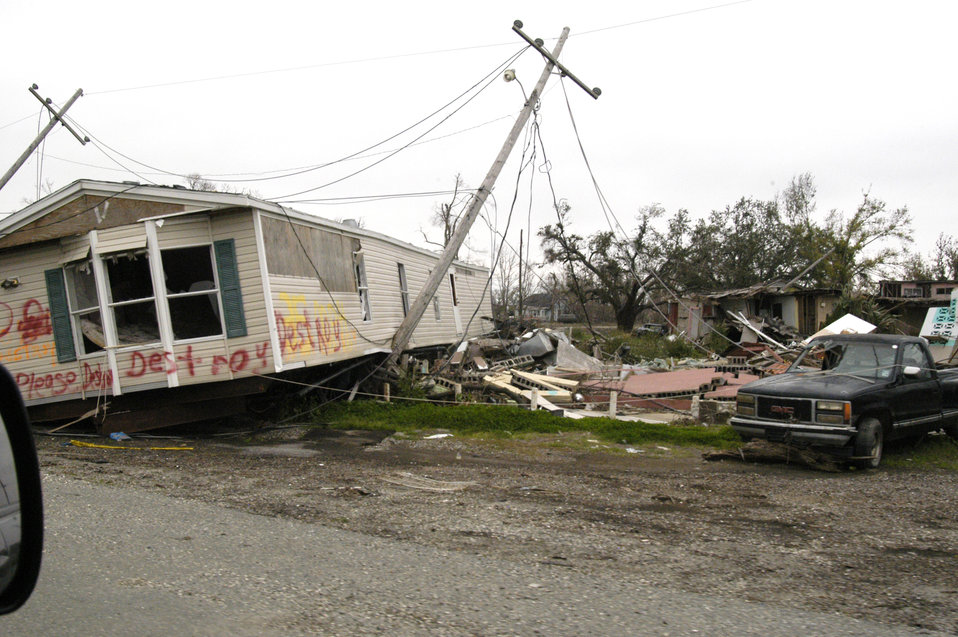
Thousands of homes were destroyed in Plaquemines Parish, LA, by Hurricane Katrina. Katrina made landfall on Monday morning, August 29, 2005 as a Category 3 hurricane with sustained winds of 125 mph with over a 20-foot storm surge. Katrina caused catastrophic damage over 90 thousand square miles across Louisiana with an estimated $75 billion dollars in damage. The total economic impact to the Gulf Coast was estimated at over $150 billion. 80% of New Orleans, LA, was underwater with some areas more than 20 feet deep. Less than a month later southern Louisiana was struck by a second Category 3 hurricane Rita inflicting more damage in the southwestern areas of Louisiana adding an addition $12 billion worth of damage to the already beleaguered state. The U. S. Army Corps of Engineers (USACE) under the auspices of Federal Emergency Management Agency (FEMA) was the lead service in providing assistance to the citizens of Louisiana. The U.S. Department of Agriculture (USDA) supplied emergency food aid, emergency loan assistance to farmers and home owners, and USDA personnel from around the nation volunteered their time and muscle to aid in the recovery operations.